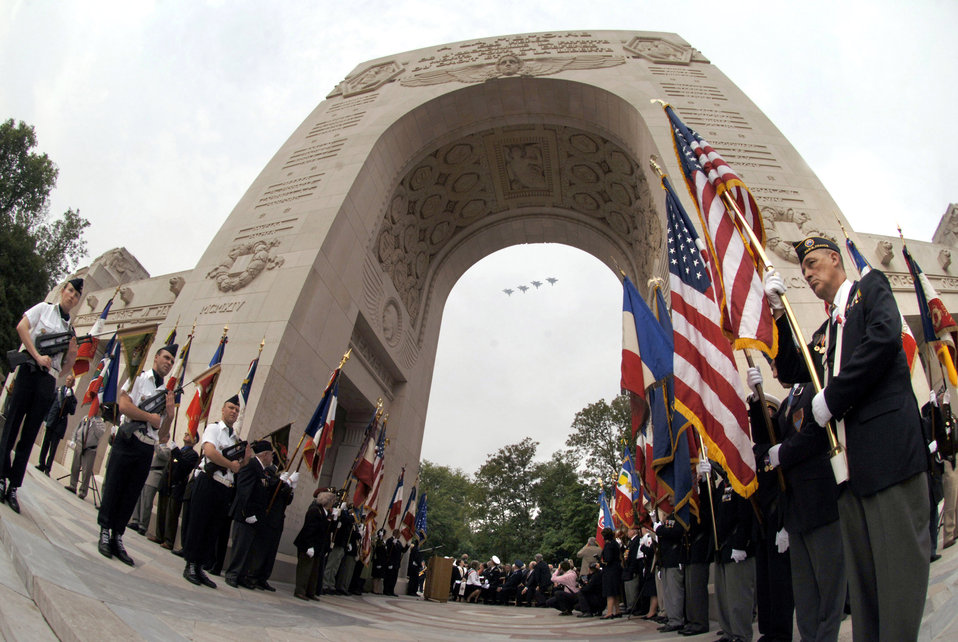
Early aviators memorialized

Military fighters fly over a ceremony at the Lafayette Memorial outside Paris where French and Americans gathered to pay homage to the United States' first combat aviators who comprised the Lafayette Escadrille. The all-American squadron of volunteers flew under the French flag during World War I where many gave their lives. The F-15 Eagles that were part of the flyover are from the 48th Fighter Wing at Royal Air Force Lakenheath, England.